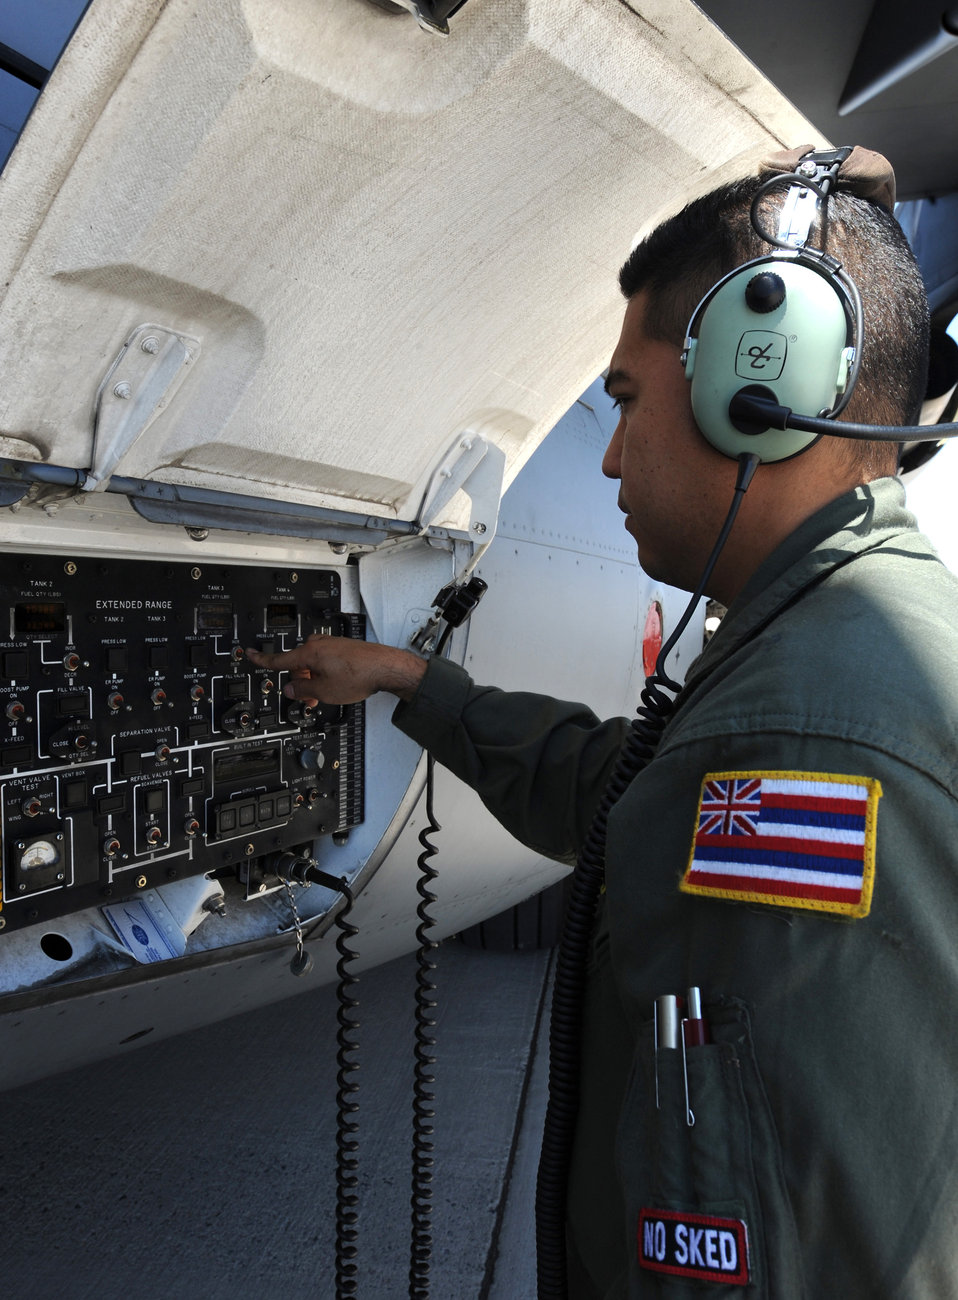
Testing mobility forces

Staff Sgt. Joey Laybon prepares to receive fuel on a C-17 Globemaster III May 20 while participating in the Mobility Air Forces Exercise at Nellis Air Force Base Nev. Sergeant Laybon is a crew chief assigned to the Hawaii Air National Guard?s 154th Aircraft Maintenance Squadron at Hickam Air Force Base, Hawaii.